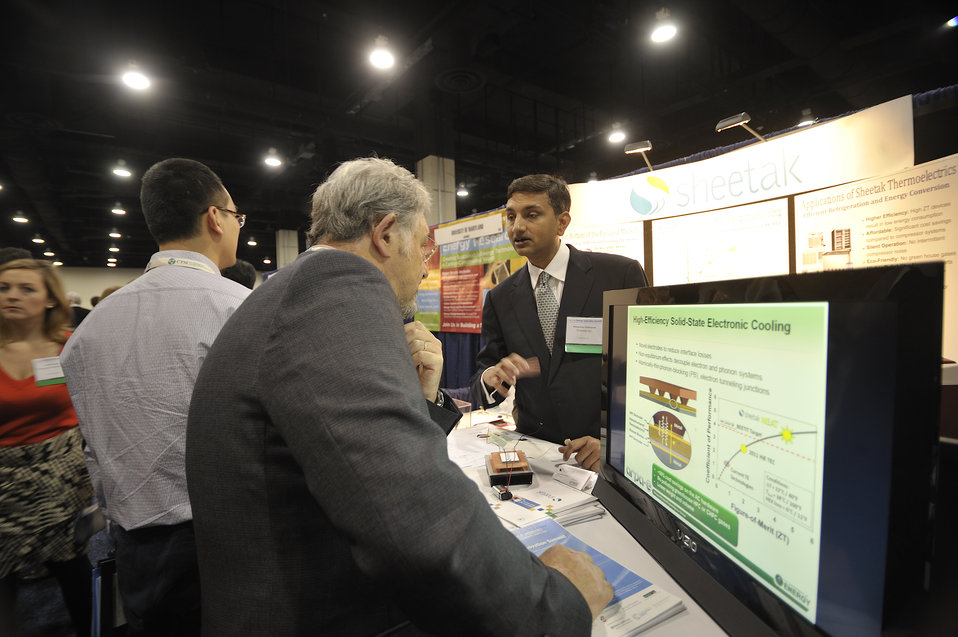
ARPA-E Energy Innovation Summit 2011, 44 of 83

Sheetak Thermoelectrics booth at the Summit's Technology Showcase.